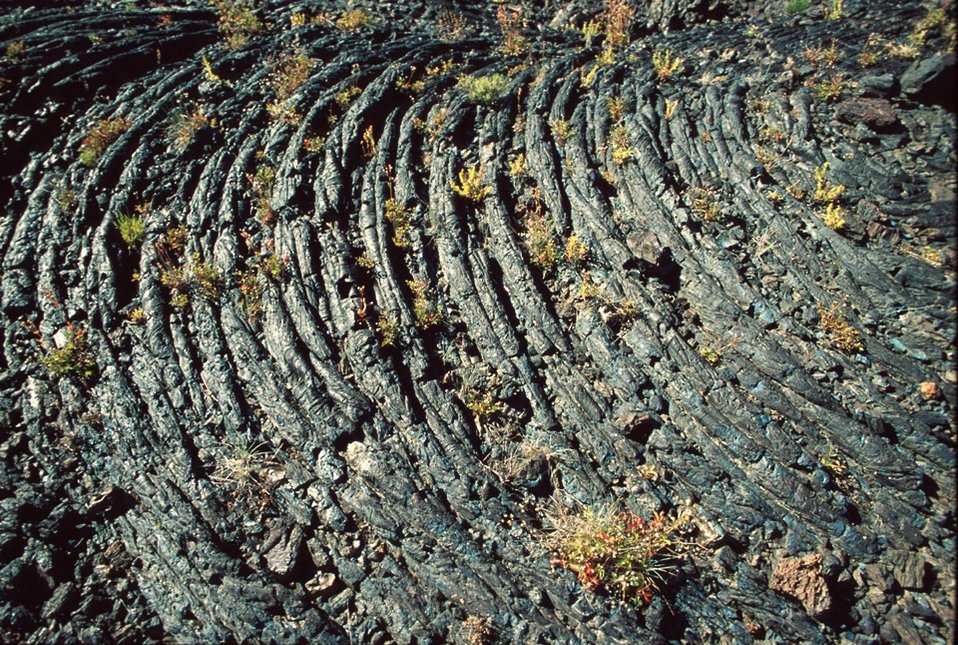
Craters of the Moon National Monument Shoshone Field Office USRD Upper Snake River District